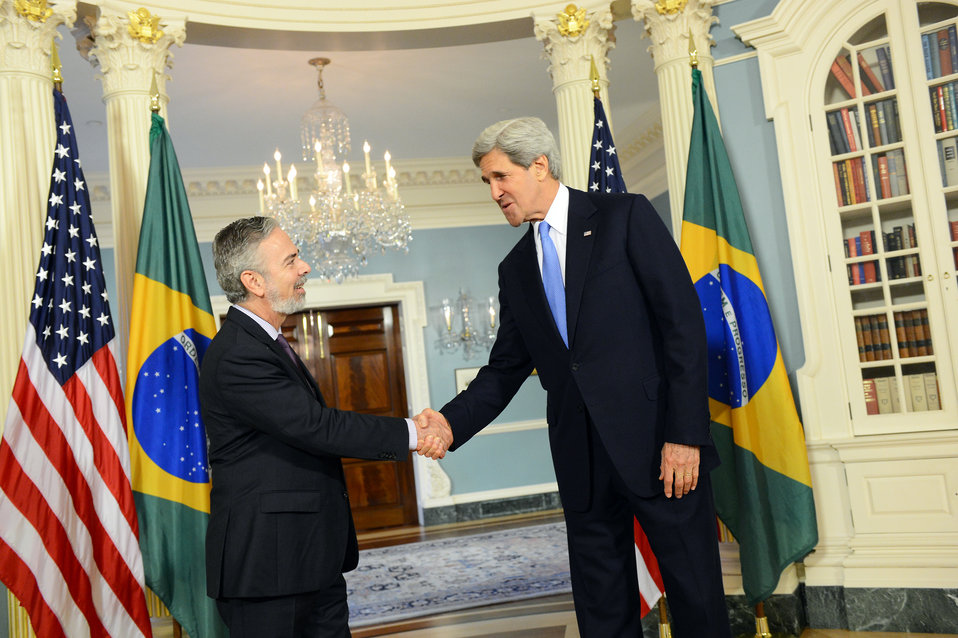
Secretary Kerry Meets With Brazilian Foreign Minister Patriota

U.S. Secretary of State John Kerry meets with Brazilian Foreign Minister Antonio de Aguiar Patriota at the U.S. Department of State in Washington, D.C., on May 20, 2013.